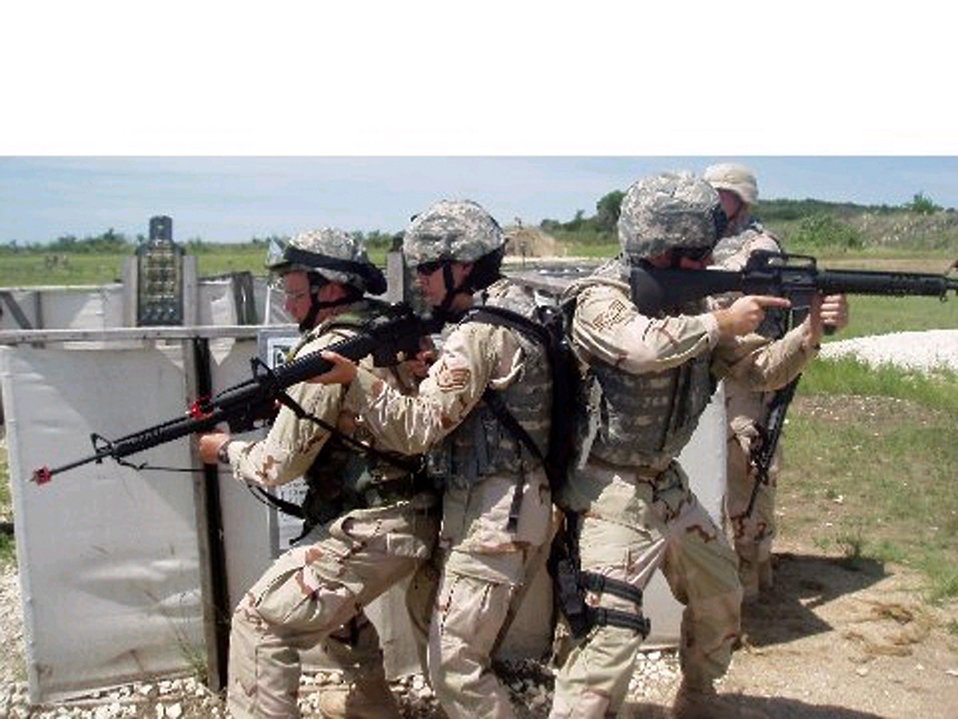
Spangdahlem Airmen deploy to fill Army billets

Airmen perform a room clearing drill at Fort Hood, Texas, as part of predeployment training. The Airmen are assigned to the 52nd Logistics Readiness Squadron from Spangdahlem Air Base, Germany.